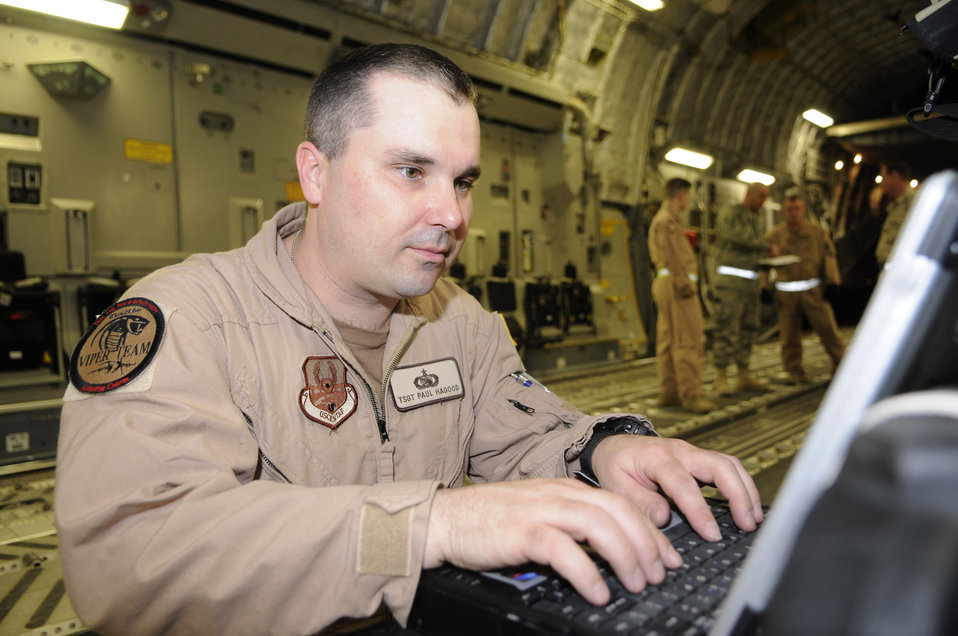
Vipers secure communication for DVs

Tech. Sgt. Paul Hagood monitors the Viper system while on a C-17 Globemaster III Feb 19 in Southwest Asia. Sergeant Hagood is able to monitor the aircraft position, signal strength and equipment status. Sergeant Hagood is deployed from Schriever Air Force Base, Colo, to the 379th Expeditionary Communications Squadron.